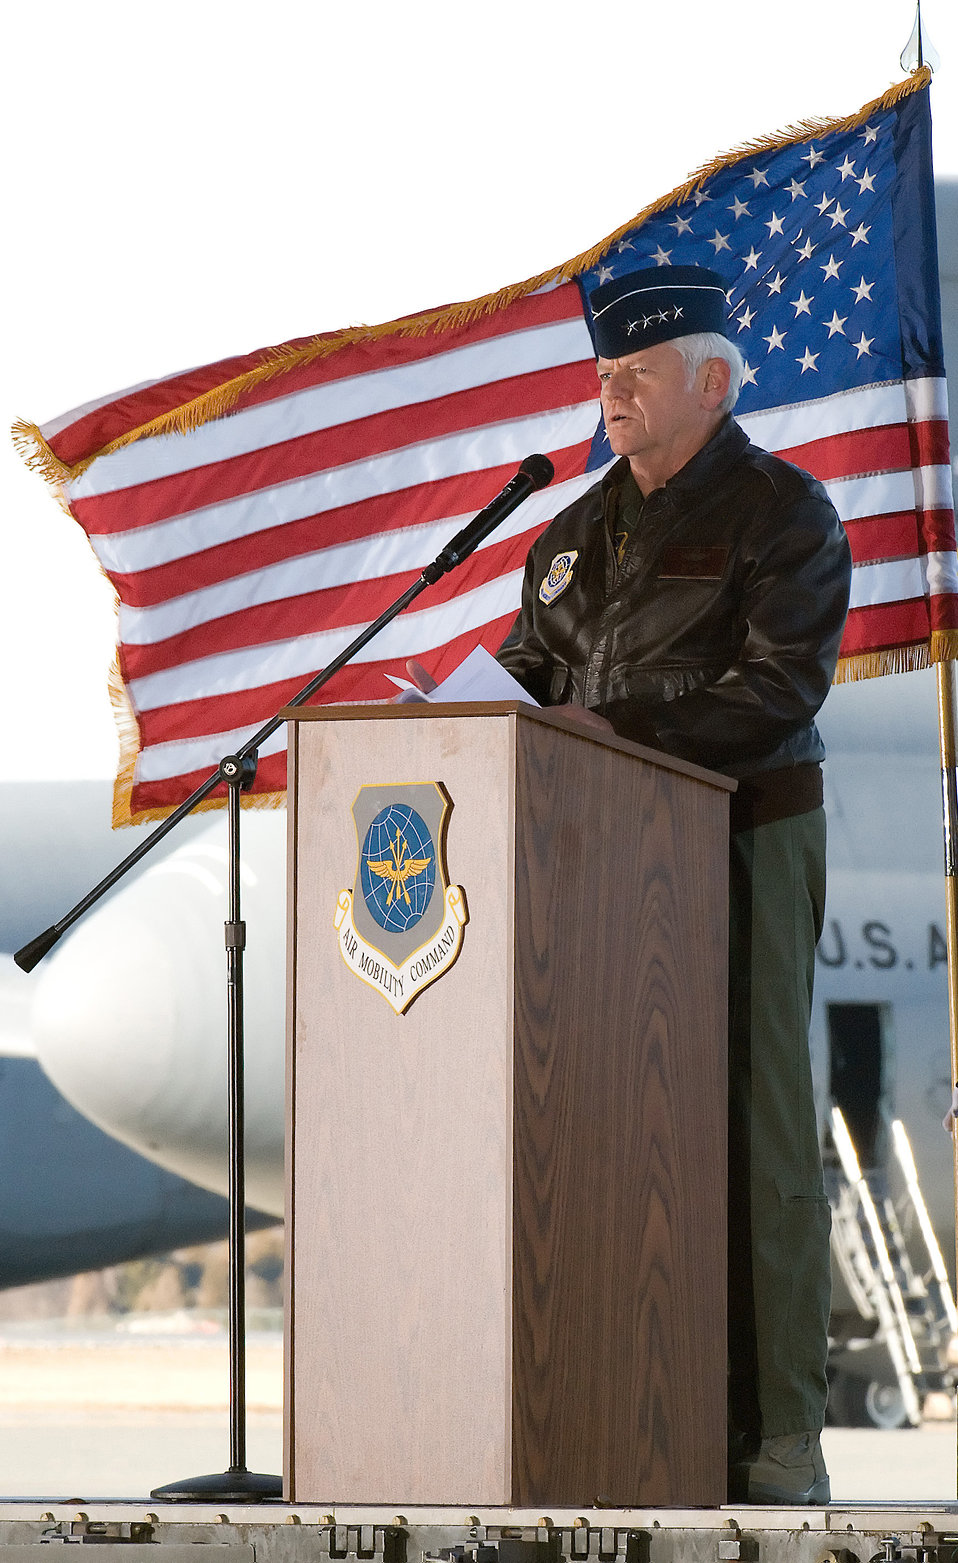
The Spirit of Global Reach

Gen. Arthur Lichte, Air Mobility Command commander, presents Team Dover's first C-5M Super Galaxy, The Spirit of Global Reach, during a ceremony on Dover Air Force Base, Del., Feb. 9.